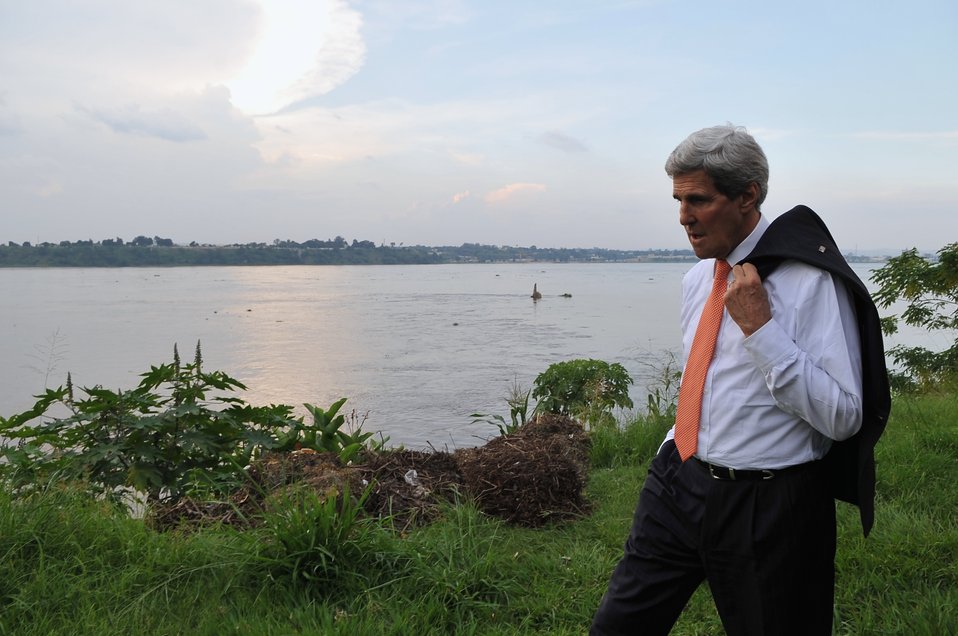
Secretary Kerry Takes Late-Afternoon Walk Along Congo River

U.S. Secretary of State John Kerry takes a late-afternoon walk along the Congo River after speaking to employees of Embassy Kinshasa during a visit to the Democratic Republic of Congo on May 3, 2014.